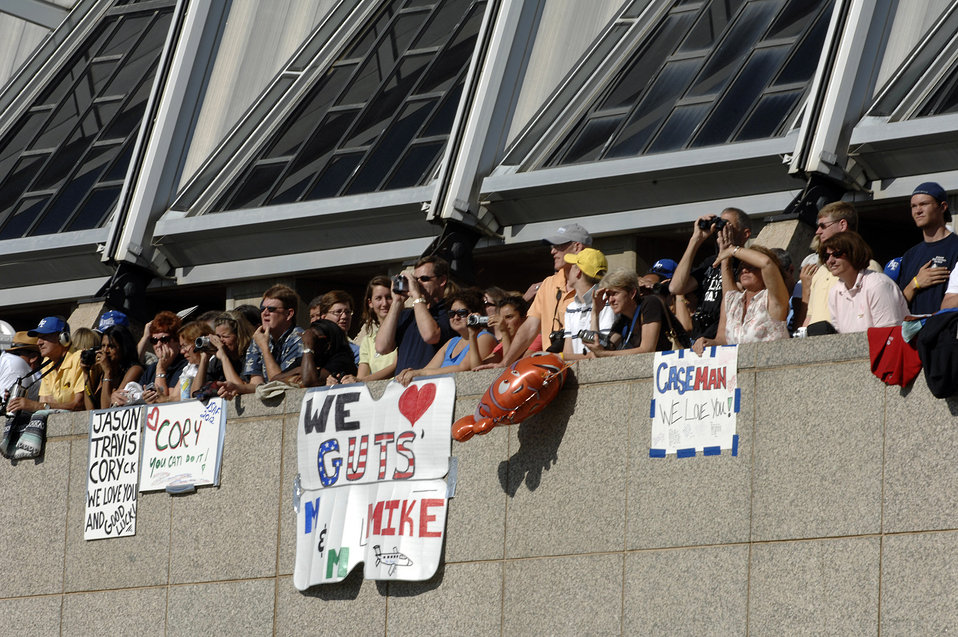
Class of 2012 Arrives

Friends and family members await the start of the Swearing-In Ceremony on Day Two of the 38 days of Basic Cadet Training June 27 at the U.S. Air Force Academy, Colo. Inprocesing marks the start of 38 days of Basic Cadet Training, which is designed to prepare basic cadet trainees for entry into the cadet wing.